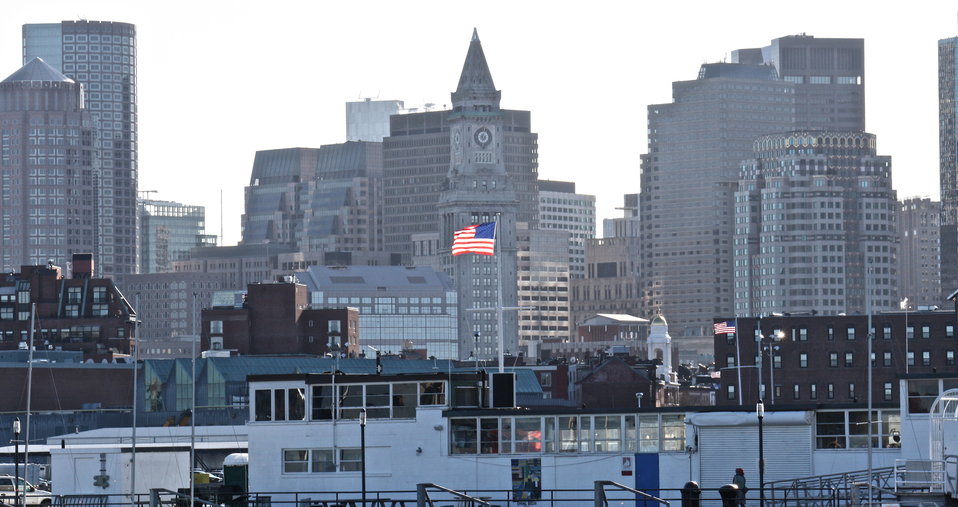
Boston, Mass. skyline

Inspectors from the Chelsea, Mass. Office of Law Enforcement oversee wildlife imports and exports for the Port of Boston, including Logan Airport and the seaport.